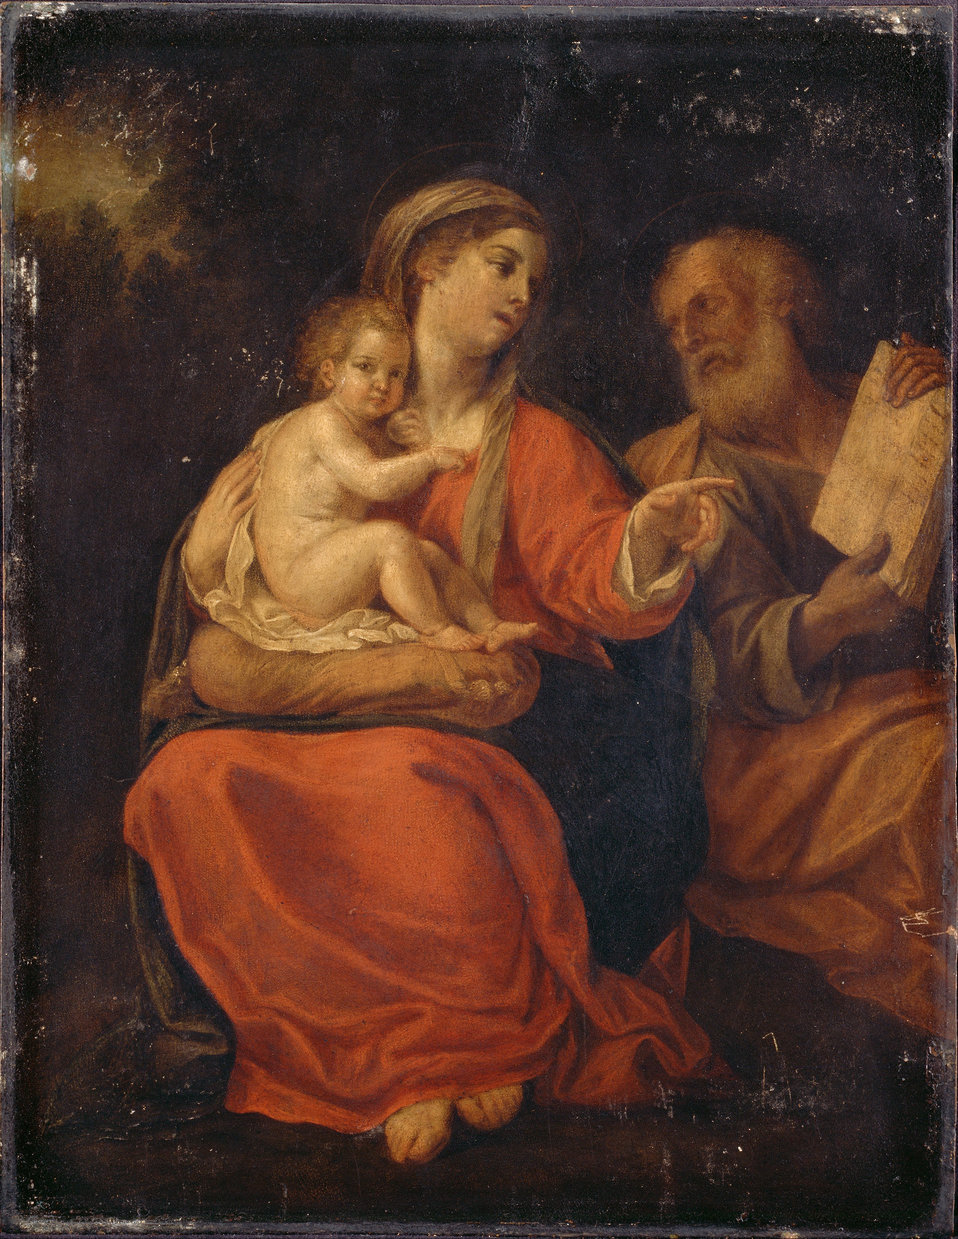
Albani, Francesco - Holy Family - Google Art Project